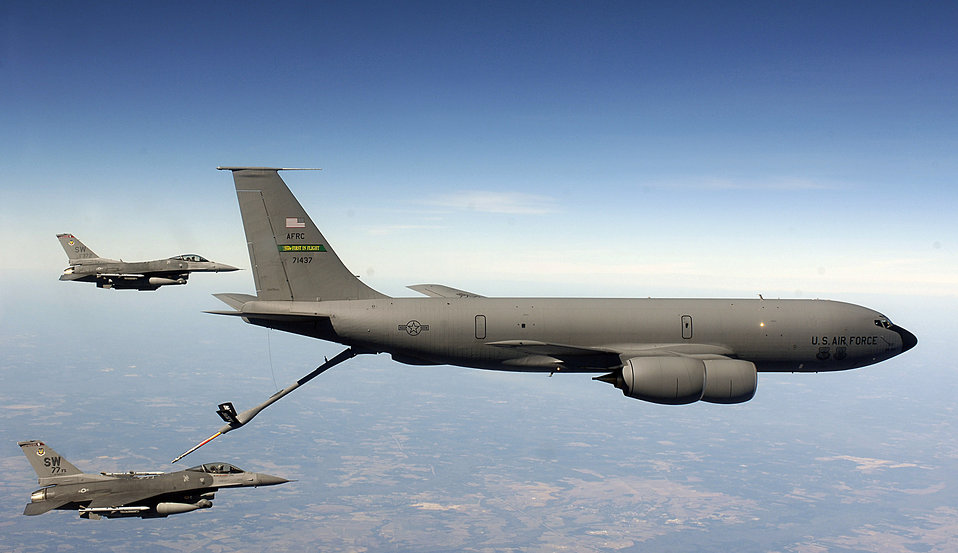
KC-135 refuels F-16 Fighting Falcons

A KC-135 Stratotanker refuels an F-16 Fighting Falcon in this stock photo. The same types of aircraft were used April 6 to trail a stolen Cessna that crossed into the U.S. from Canada and landed in Missouri after a seven-hour ordeal. The KC-135 that supported the F-16s operated under command and control of the 618th Tanker Airlift Control Center, Air Mobility Command's hub for worldwide airlift, air refueling and aeromedical evacuation operations.